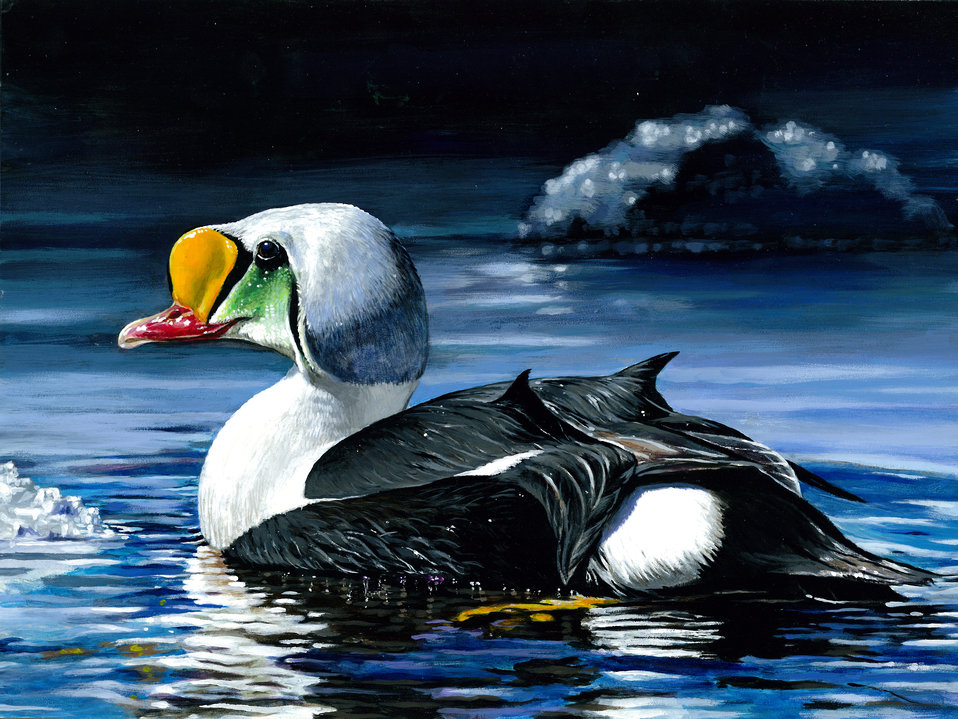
Photo of the Week - Junior Duck Stamp Winner (NJ)

Photo of the Week - April 28 2014

Congratulations to 16-year-old Si youn Kim, of Tenafly, N.J., whose acrylic painting of a king eider will grace the 2014-2015 Federal Junior Duck Stamp. The painting was chosen today by a panel of judges at the national Junior Duck Stamp Art Contest. This year, more than 29,000 students participated in state Junior Duck Stamp competitions. Proceeds from sales of the $5 Junior Duck Stamp support environmental education.